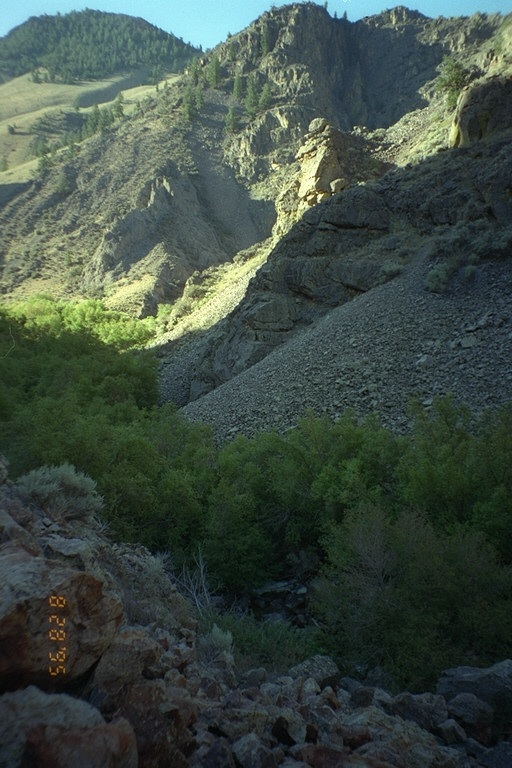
Riparian area Public Lands Salmon Field Office UCSC Upper Columbia Salmon Clearwater District